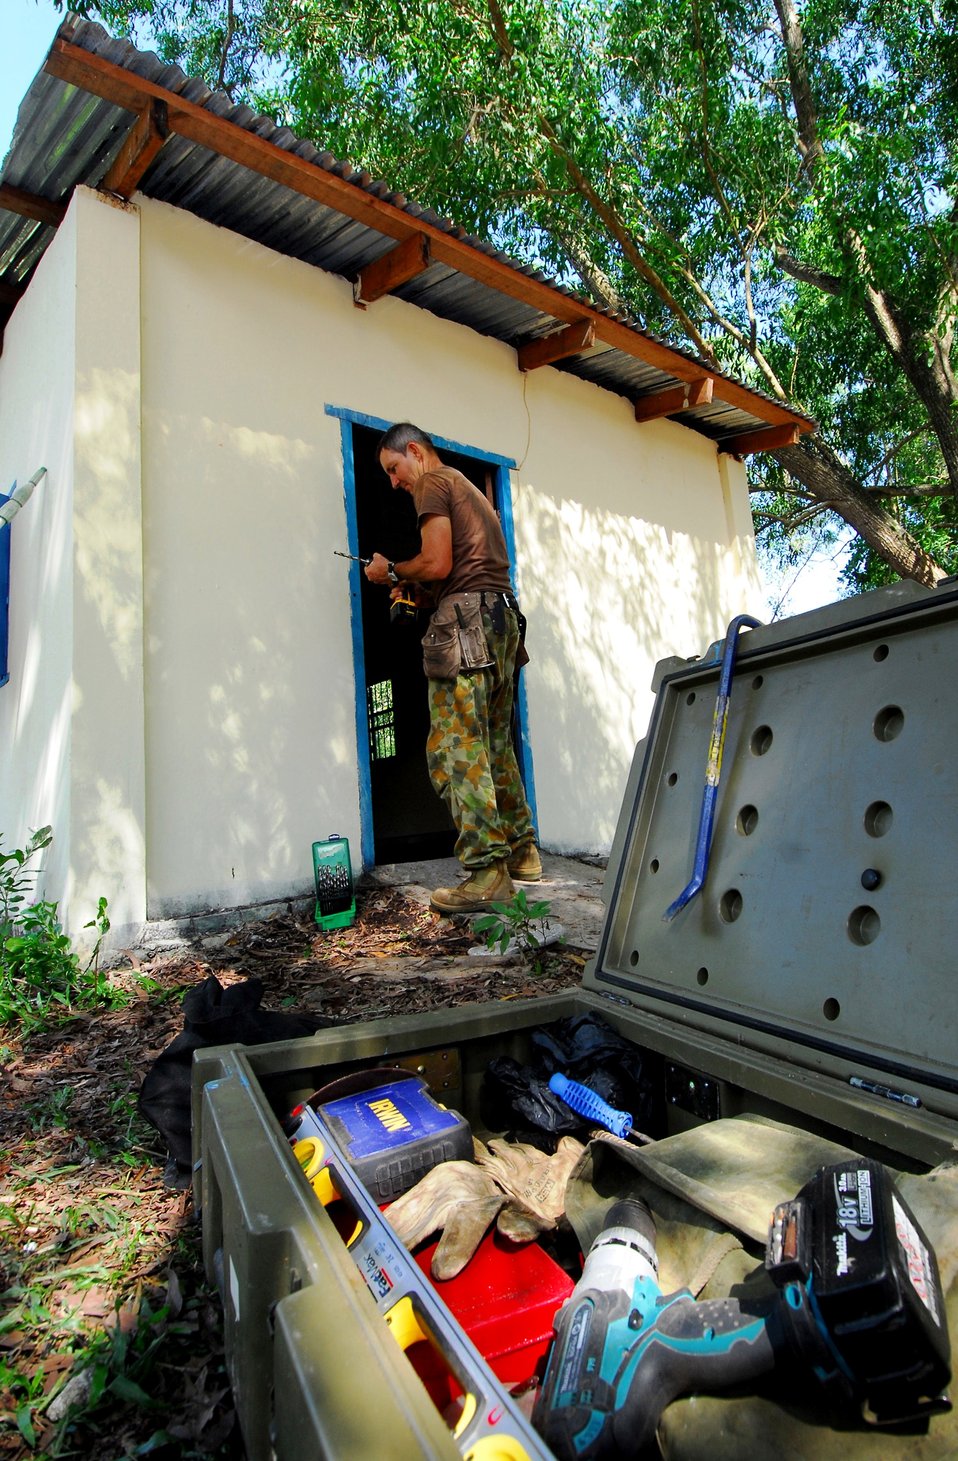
Australian Army Combat Engineer Sapper Bradley Hartnett tightens his drill bit after drilling a hole for a lock during an engineering civic action event at O. Tres Chas Primary School in Sihanoukville, Cambodia, on June 24, 2010. The Military Sealift Command hospital ship, USNS Mercy (T-AH 19), is in Cambodia in support of Pacific Partnership 2010.